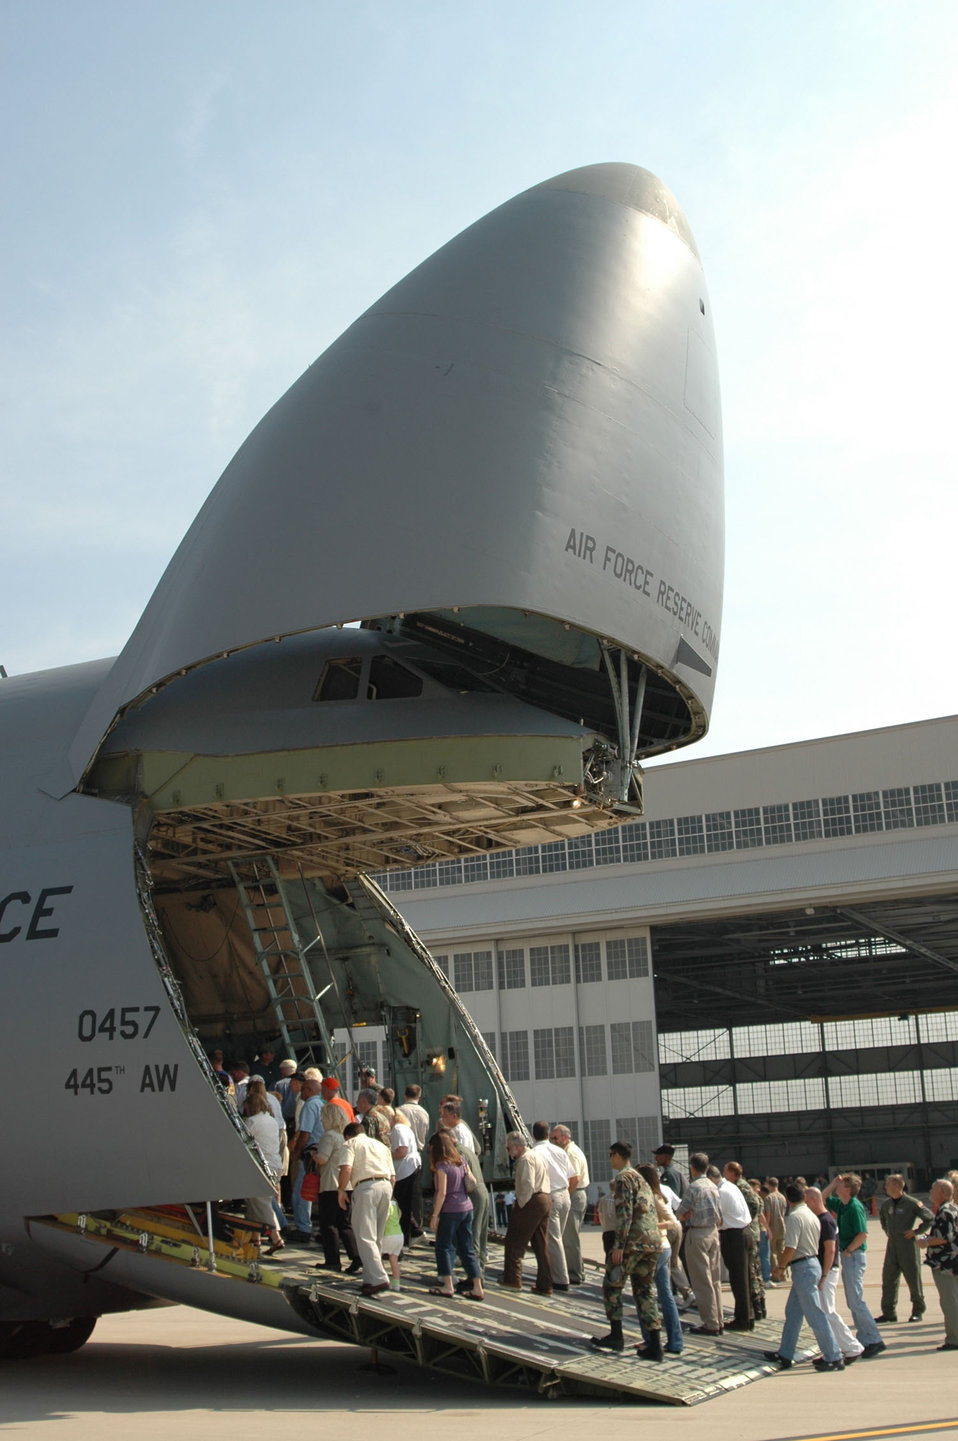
First C-5A assigned to 445 Airlift Wing

A crowd of 350 greeted the first C-5A Galaxy assigned to the Air Force Reserve Command's 445th Airlift Wing, Wright-Patterson AFB, Ohio, during an arrival ceremony Oct. 3, 2005. The giant cargo hauler is replacing the retiring C-141 Starlifter fleet.